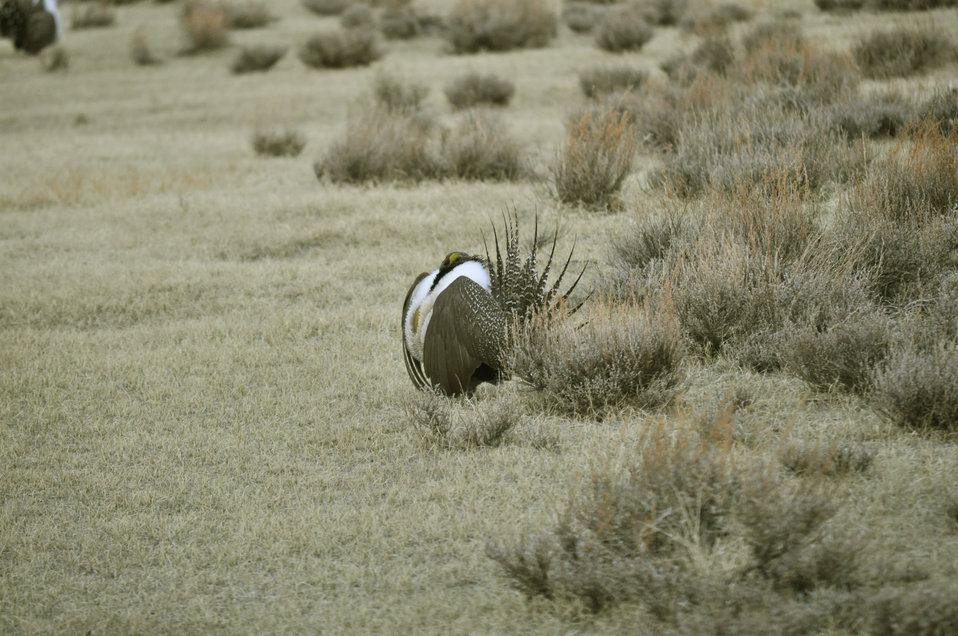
Male greater sage-grouse struts at lek (dancing or mating grounds) to attract females near Bodie, California.